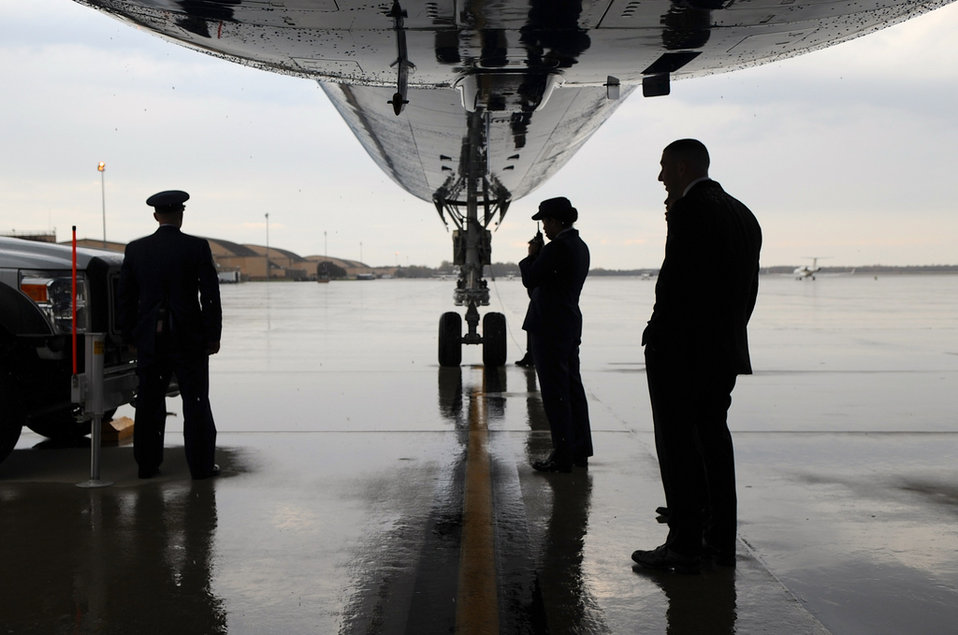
Air Force Ground Crew Keeps Dry Awaiting Secretary Kerry

U.S. Air Force Protocol and security team members from Andrews Air Force Base seek shelter from the rain under the fuselage of a C-32 aircraft as they await U.S. Secretary of State John Kerry at the outset of an 11-day trip to to Northern Africa, Europe, the Middle East, Saudi Arabia, and the United Arab Emirates, on November 2, 2013.